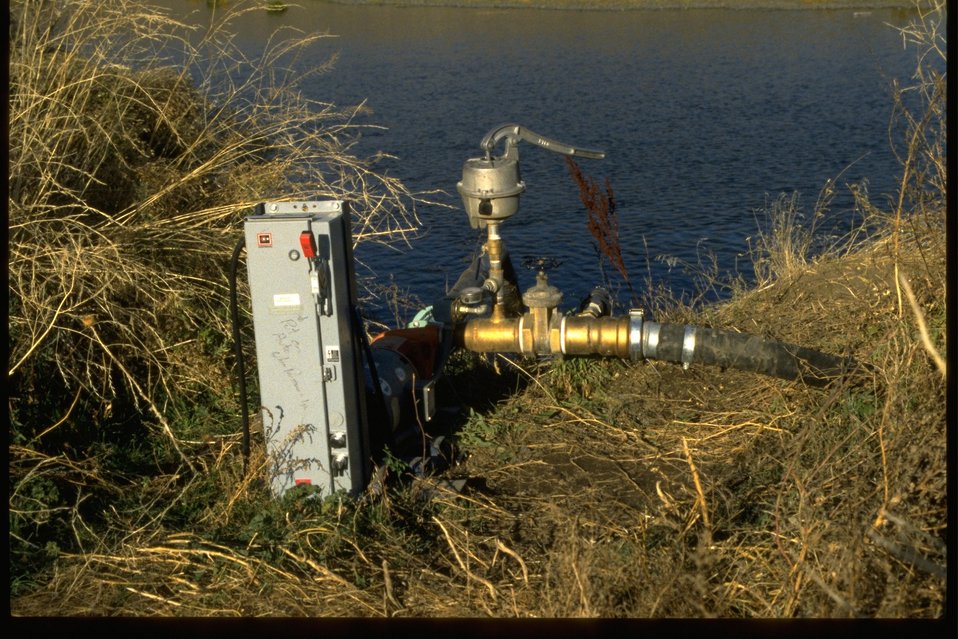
Electronic pump system for wildlife and cottonwood fields in the John Day River.